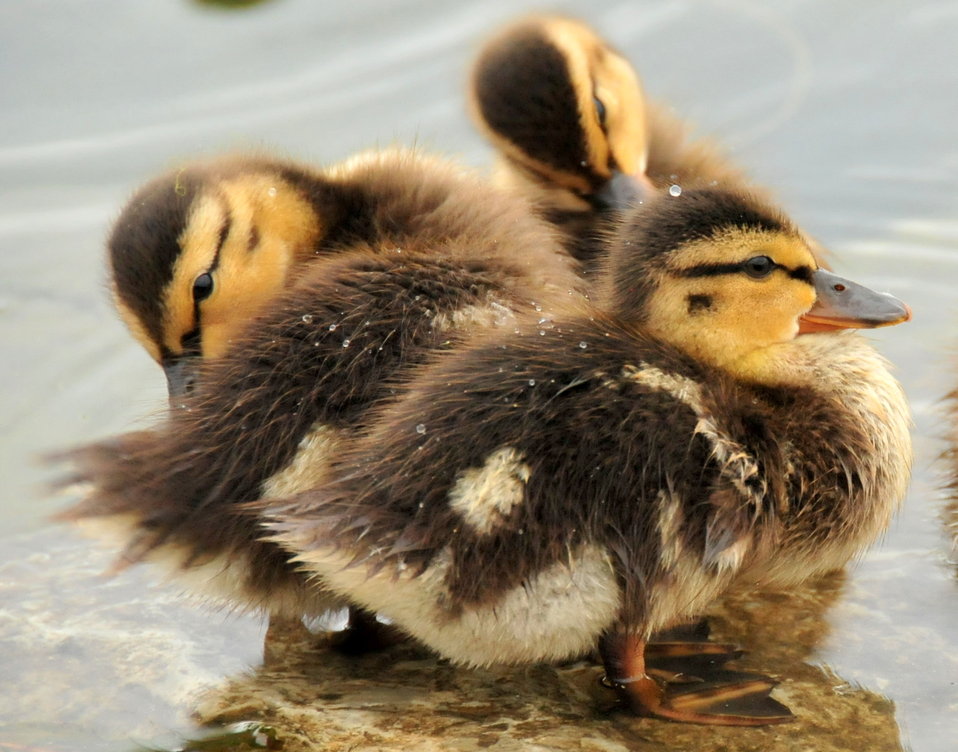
Mallard Ducklings 4